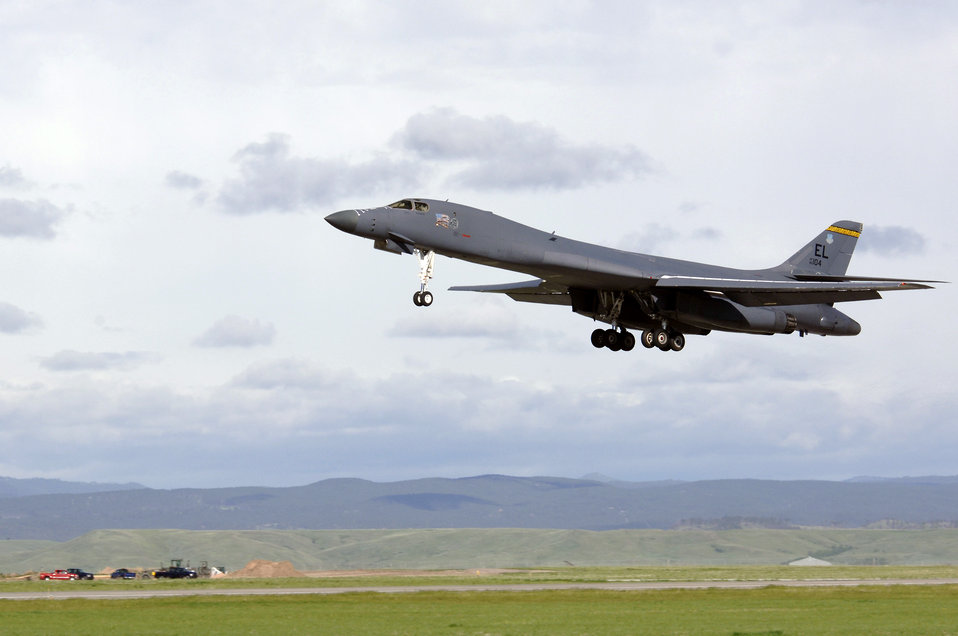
Exercise Badlands Express 06-03

A B-1 Lancer takes off from Ellsworth Air Force Base, S.D., on Tuesday, May 23, 2006, as part of Exercise Badlands Express 06-03. The exercise will prepare the base for an operational readiness inspection in July.